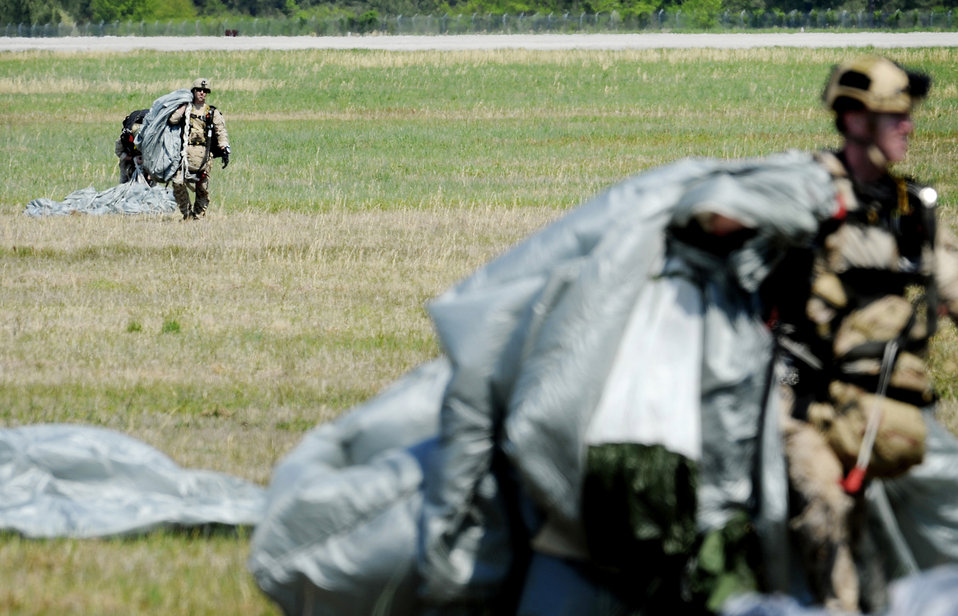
Joint training at 12,500 feet

Navy SEALs gather their parachutes after jumping from a C-17 Globemaster III April 15, 2010, over Fort Pickett Maneuver Training Center, Va. The jump was part of joint training exercise with 517th Airlift Squadron members from Elmendorf Air Force Base, Alaska.